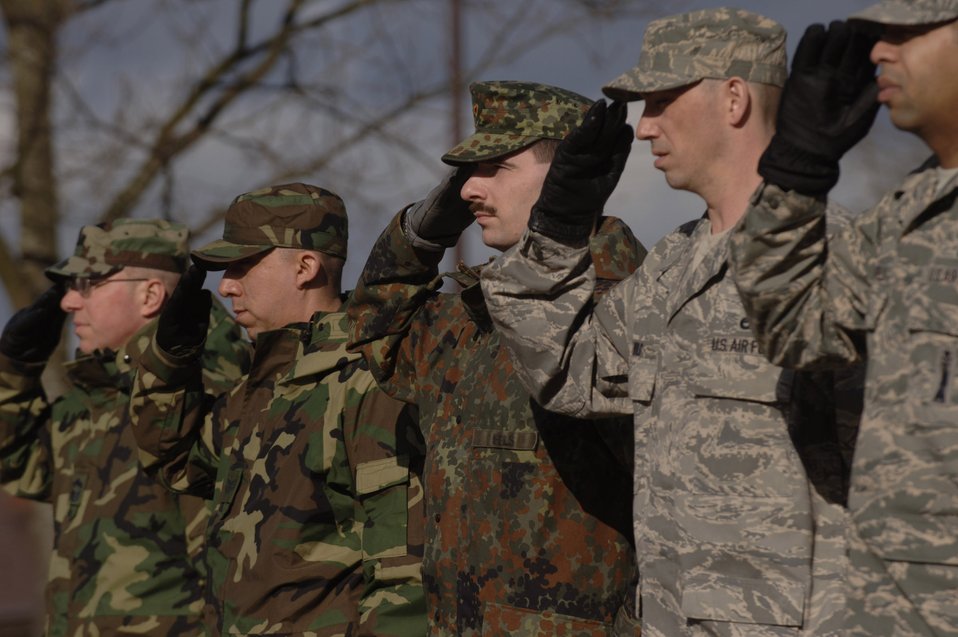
German sergeant enrolls in USAFE NCO Academy

German air force Master Sgt. Holger Fels stands with Kisling Noncommissioned Officer Academy instructors during a retreat ceremony March 26 at Kapaun Air Station, Germany. Sergeant Fels, a German NCO academy instructor in Appen, Germany, voluntarily enrolled in the six-week academy course designed for U.S. Air Force technical sergeants to prepare for a four-year special duty assignment as an exchange instructor at the Senior NCO Academy at Maxwell Air Force Base, Ala.